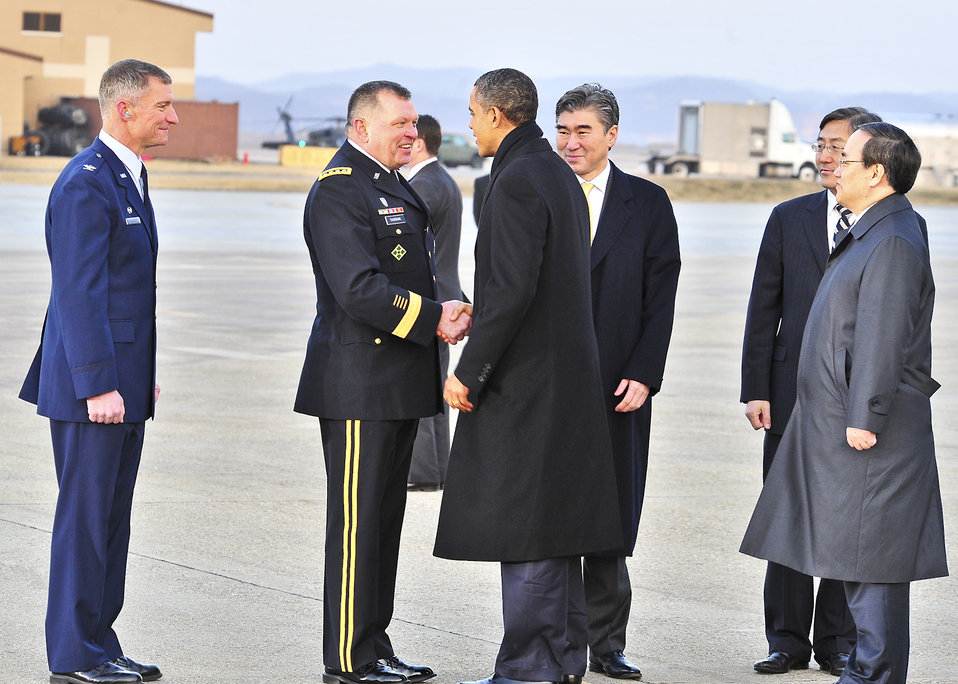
Obama visits Osan AB

Gen. James Thurman, the U.S. Forces Korea commander, greets President Barack Obama at Osan Air Base, South Korea, March 25, 2012. The president flew to the base on Air Force One on his way to the Nuclear Security Summit in Seoul, South Korea.